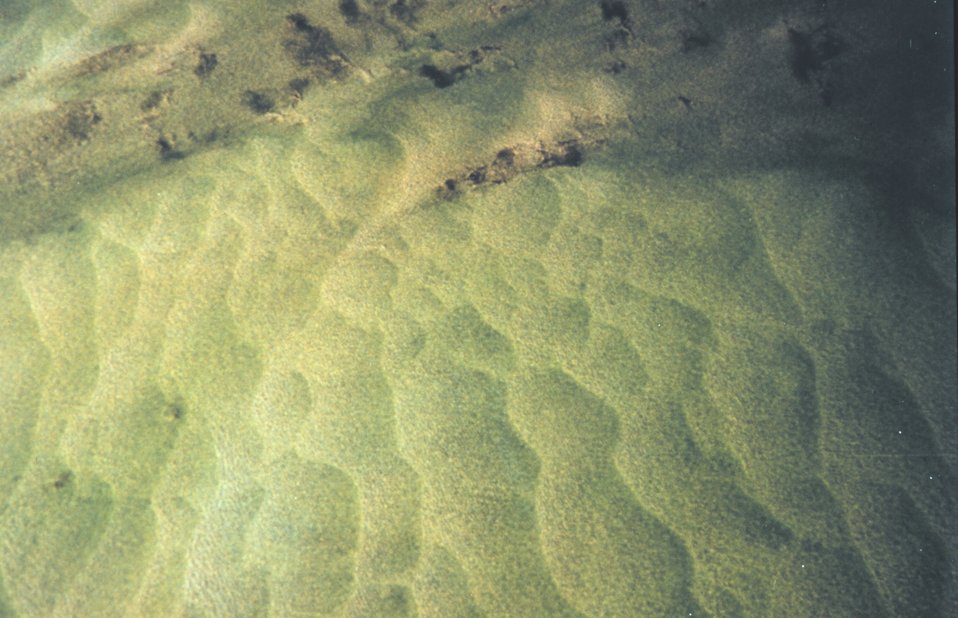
Giant sandwaves as seen from NOAA helicopter during SHOALS Lidar